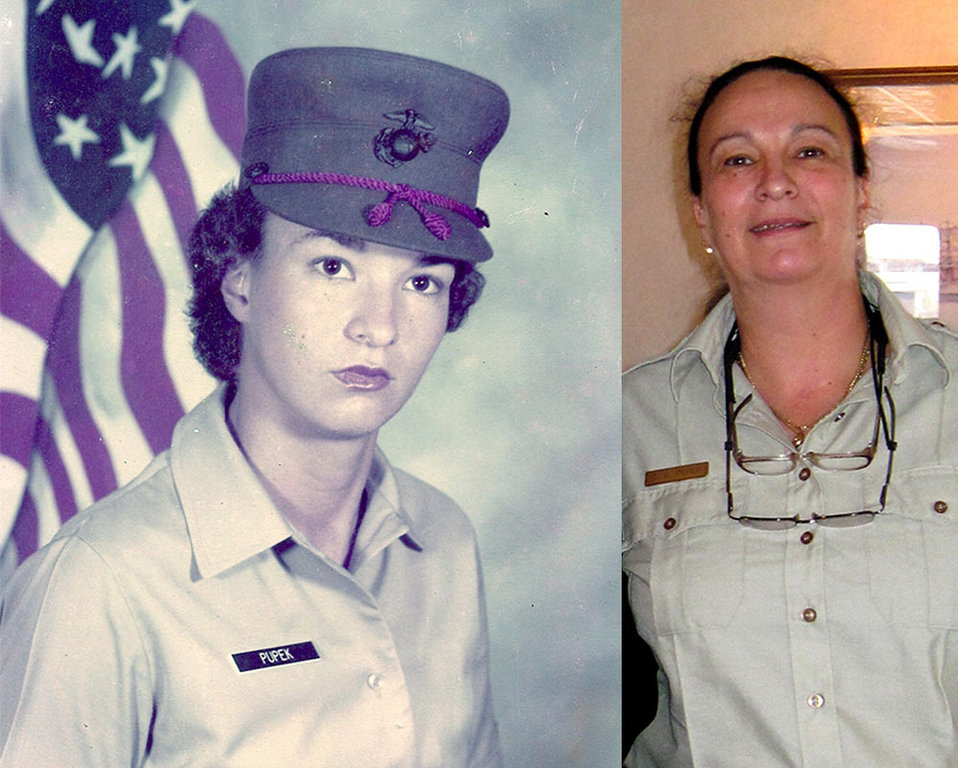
Cheryl Pupek-Southeast Region

Originally from New Jersey, Cheryl 'C.C.' Pupek entered the U.S. Marine Corps in 1981. She served for 20 years and decided to retire in Beaufort, South Carolina. She has worked in the computer, logistics and admin sections within the Aviation Supply Department and also worked with a few different contractors at Marine Corps Air Station Beaufort, S.C. In May 2012, she started working at the Savannah National Wildlife Refuge as an Admin Support Assistant. “I really enjoy it! I think it is awesome that my mother was born in Cabo Rojo, Puerto Rico, where we have a refuge. Hopefully, I'll get to visit one day!”